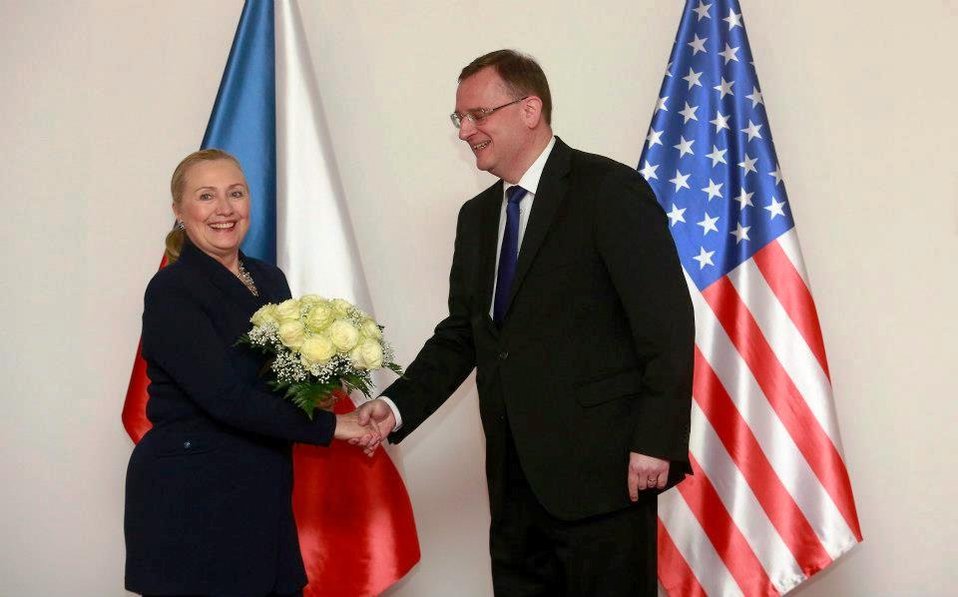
Secretary Clinton Shakes Hands With Czech Prime Minister Necas

U.S. Secretary of State Hillary Rodham Clinton shakes hands with Czech Prime Minister Petr Necas in Prague, Czech Republic, December 3, 2012.